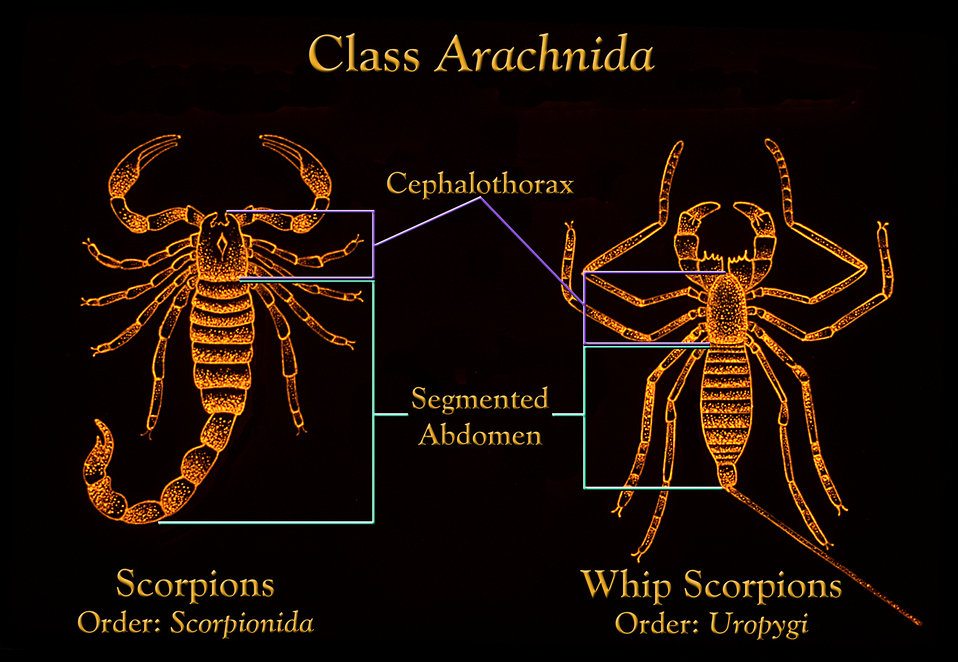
Both scorpions, Scorpionida, and whip scorpions, Uropygi display a segmented separate abdominal body region.